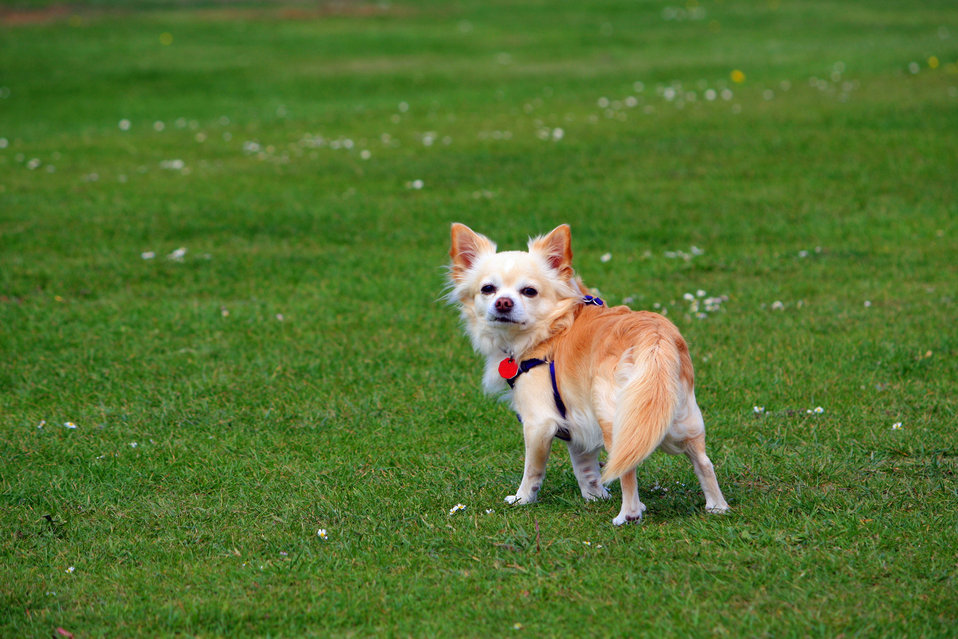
Long-haired chihuahua dog

Beautiful cute little long-haired chihuahua dog standing on the green grass.